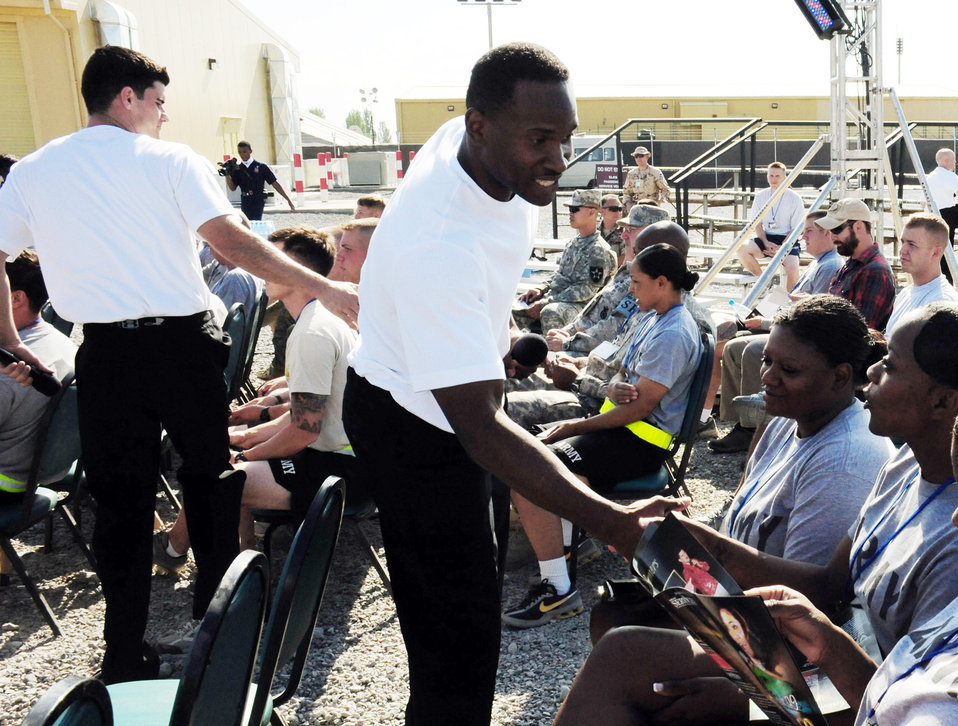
Tops In Blue entertain deployed forces in Kyrgyzstan

Staff Sgt. Wendell Boone Jr. welcomes Army Sgts. Victoria Love and Yolanda Robinson to the morning show performed for servicemembers and coalition forces July 10 at Manas Air Base, Kyrgyzstan, July 10. Sergeant Wendell, a Tops In Blue vocalist, was also part of the Tops In Blue team in 2007, was able to meet his wife, Tech. Sgt. Patrika Boone, during the team's visit to Manas AB from July 8 through 10. Sergeant Boone is a 69th Aerial Port Squadron air transportation apprentice from Andrews Air Force Base, Md., and is a native of Clarksville, Tenn.